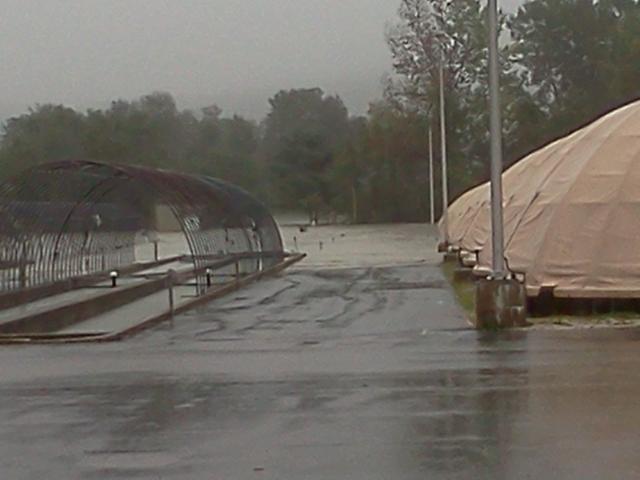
Flooding on White River National Fish Hatchery during Irene

Hatchery grounds are flooded by rising water from the White River during Hurricane Irene.